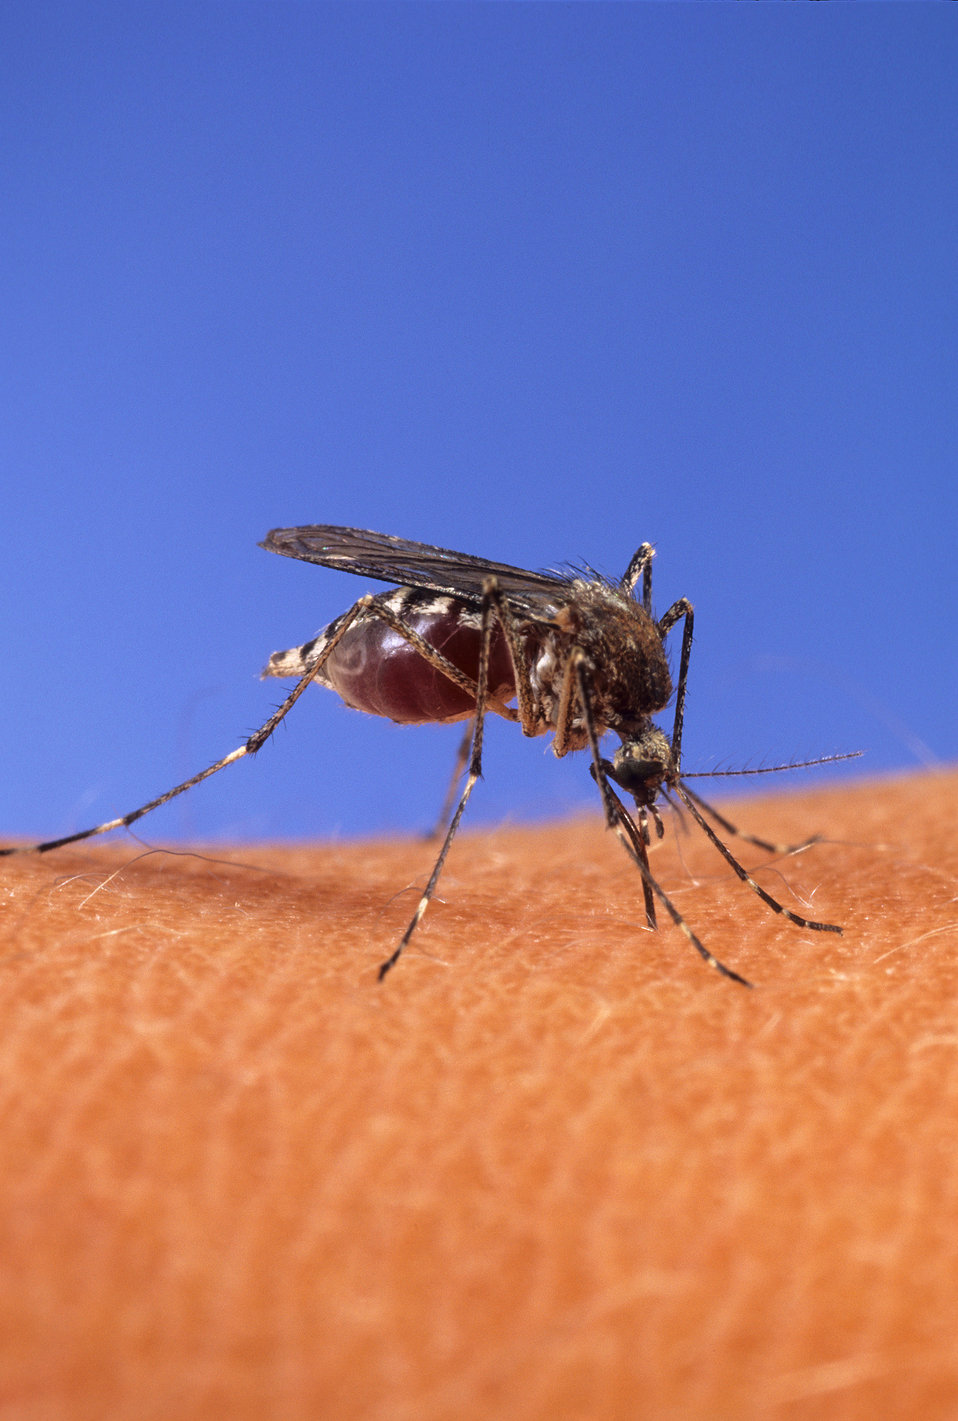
Aedes (Ochlerotatus) sp. mosquito feeds on a human source.